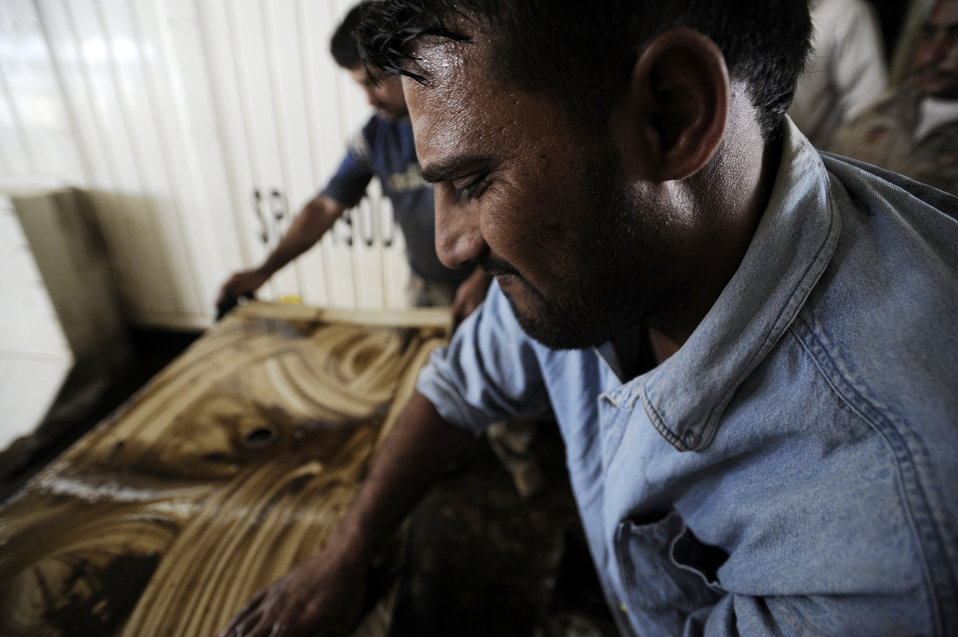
Airmen help Iraqi army take control of base operations

Iraqi contractors work on a generator that powers Camp Ur, an Iraqi military base, on the outskirts of An Nasariyah Aug. 17, 2009.